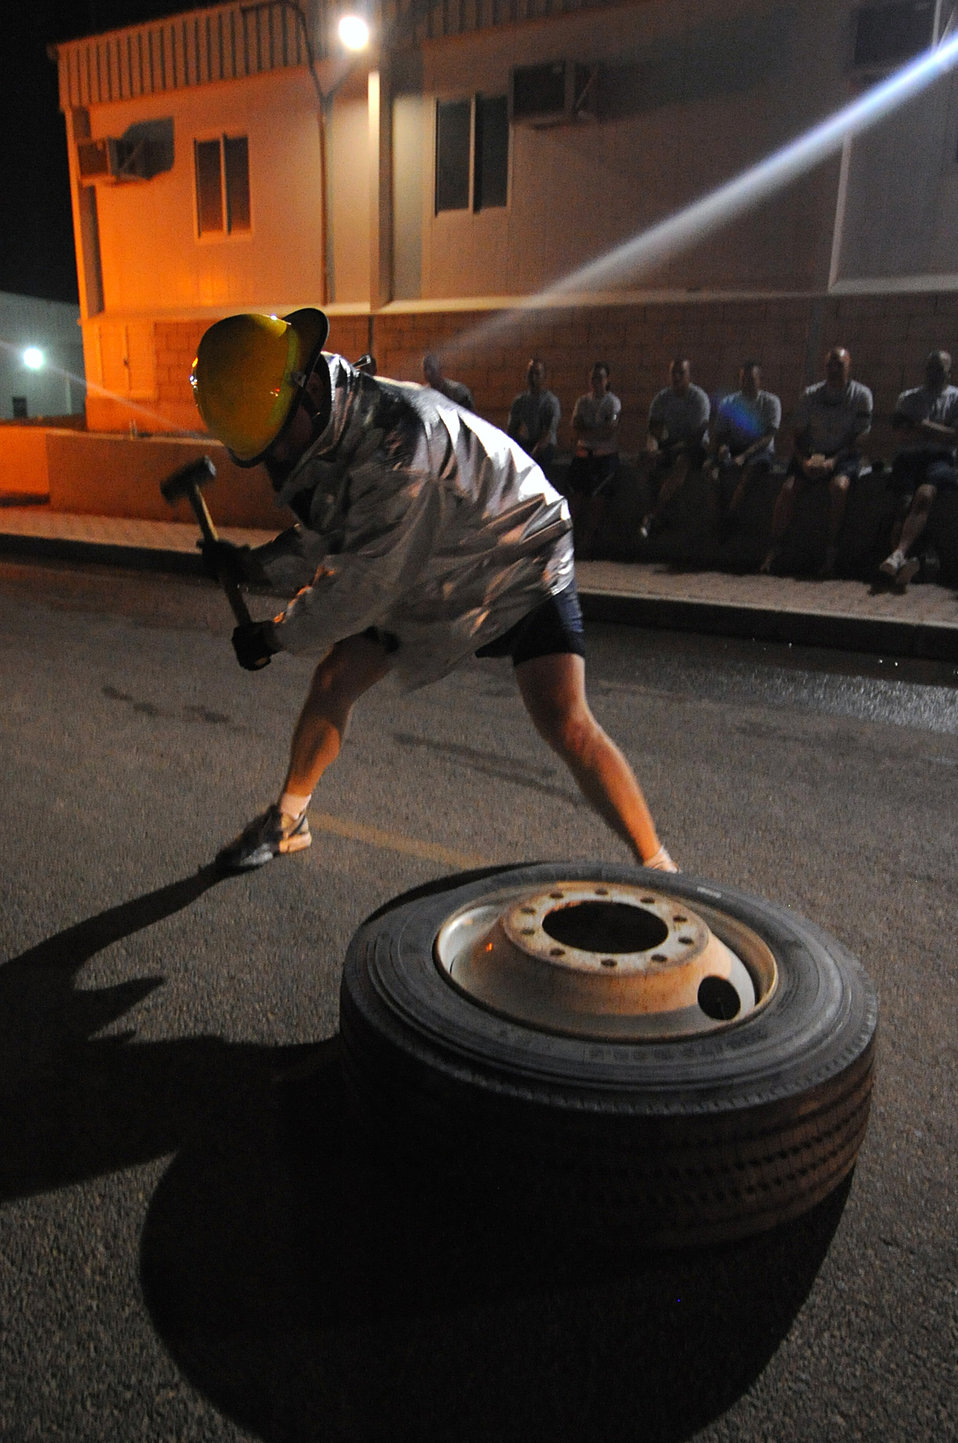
Firefighter challenge

An Air Force firefighter strikes a tire May 28, 2011, during a firefighter challenge in Southwest Asia. The challenge featured multiple events, including tool carry, equipment hoist, dummy carry, hose advance, tire strike and hose pack carry.